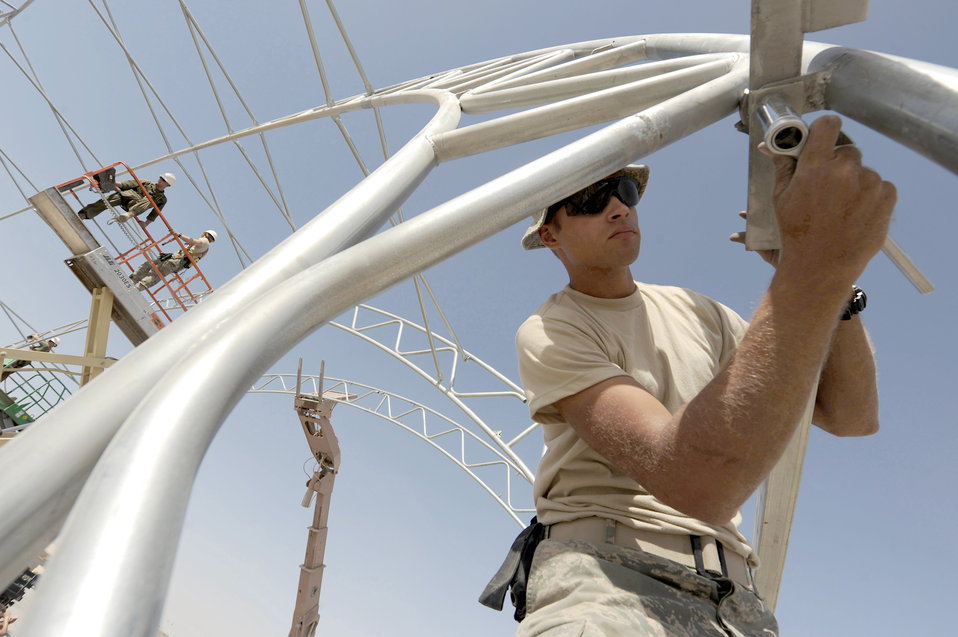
Prime Beef

Senior Airman Jonathan Carmona secures square tubing to a metal frame Sept. 23, 2010, at Kandahar Airfield, Afghanistan. Airman Carmona is a structural journeyman assigned to the 777th Expeditionary Prime Beef Squadron.